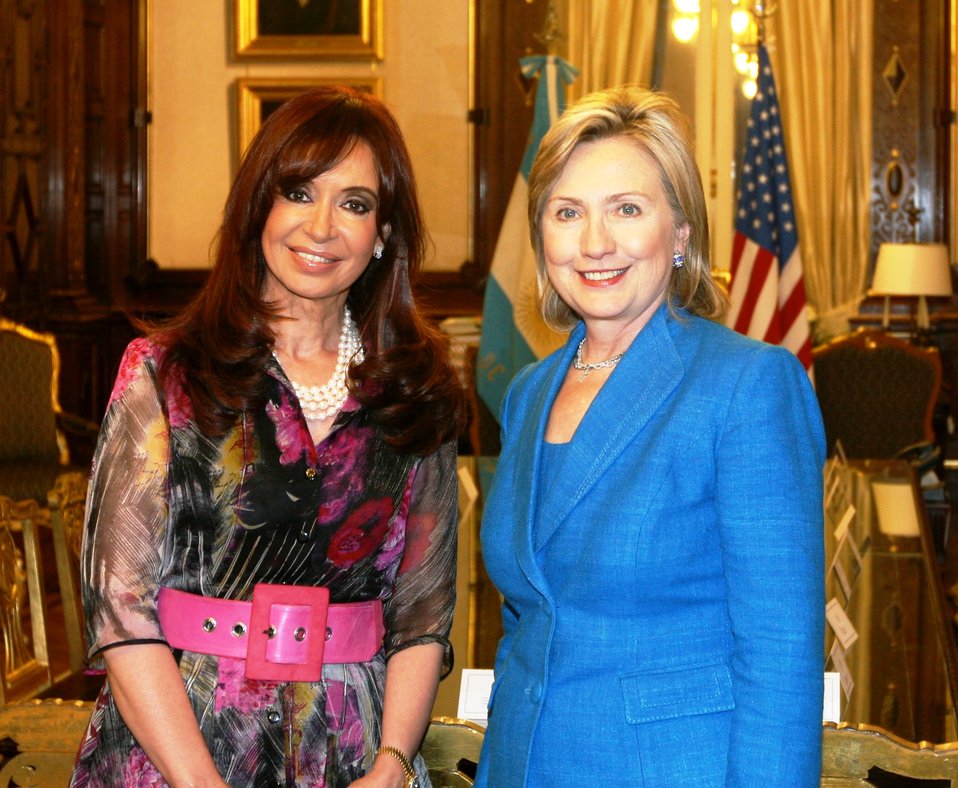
Secretary Clinton With Argentine President Cristina Fernandez de Kirchner

U.S. Secretary of State Hillary Rodham Clinton poses with Argentine President Cristina Fernandez de Kirchner following a press conference in Buenos Aires, Argentina March 1, 2010.